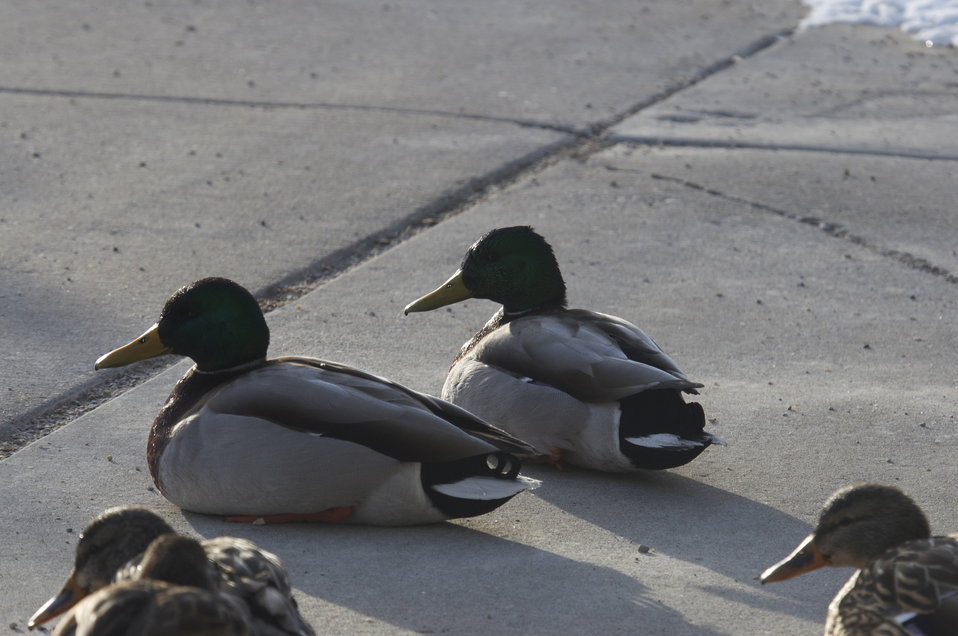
Catching Some Late Afternoon Sun

Mallards can frequently be seen on the ponds outside of the visitor center. Here, a group suns on the sidewalk just outside the visitor center front door.

Credit: USFWS / Mike Nordell, NER winter naturalist